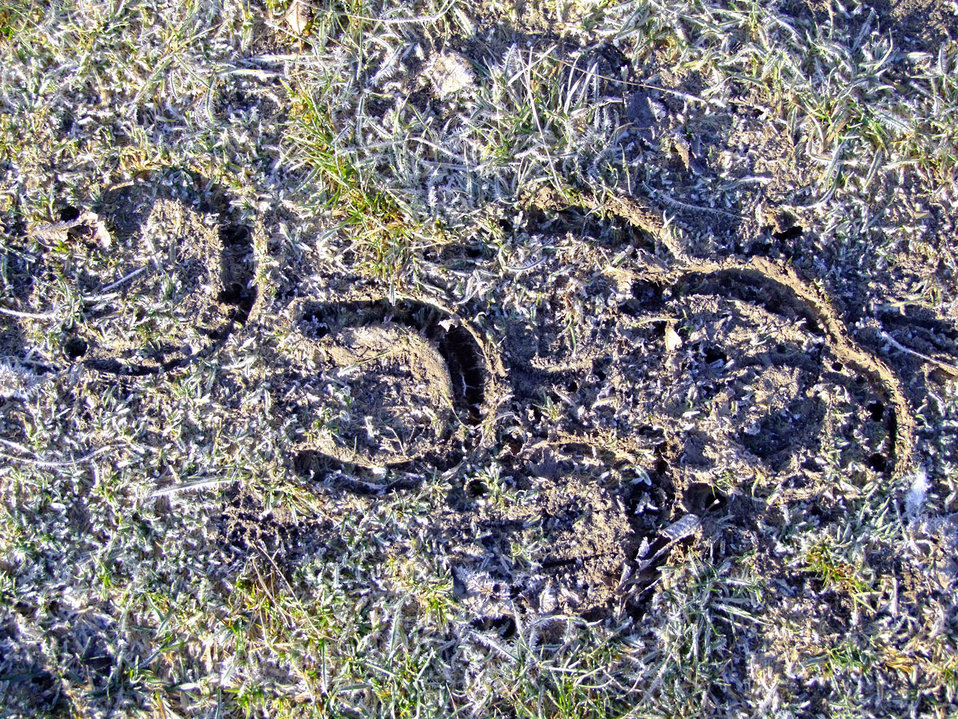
How many and when

Tracking riders in a frozen soil.